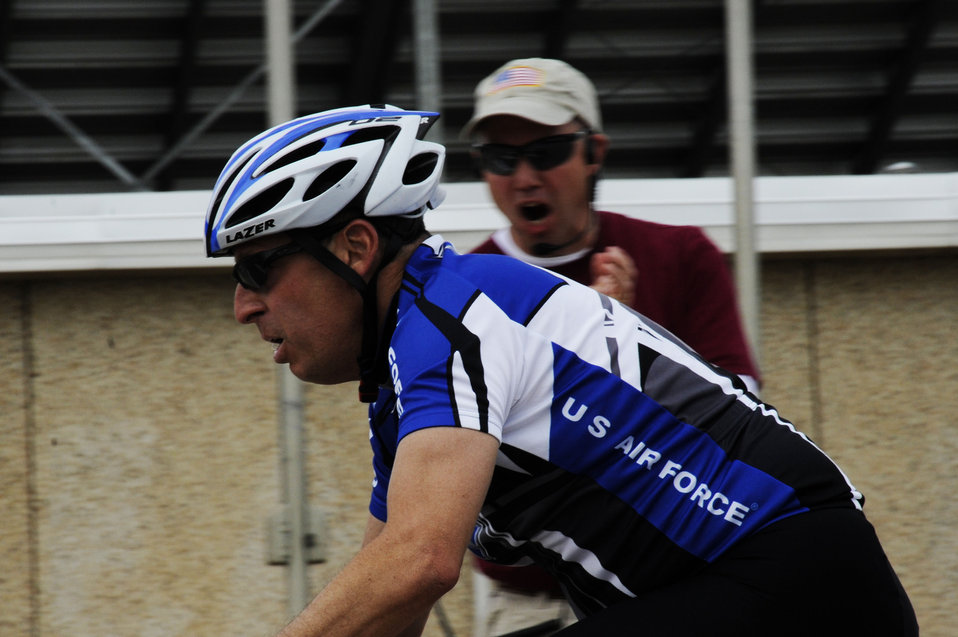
2012 Warrior Games cycling

Maj. Gregg Rich speeds by as a spectator cheers him on during the cycling portion of the Warrior Games May 1, 2012, at the U.S. Air Force Academy in Colorado Springs, Colo. Rich competed in the men's physical disability category and finished in 10th place.